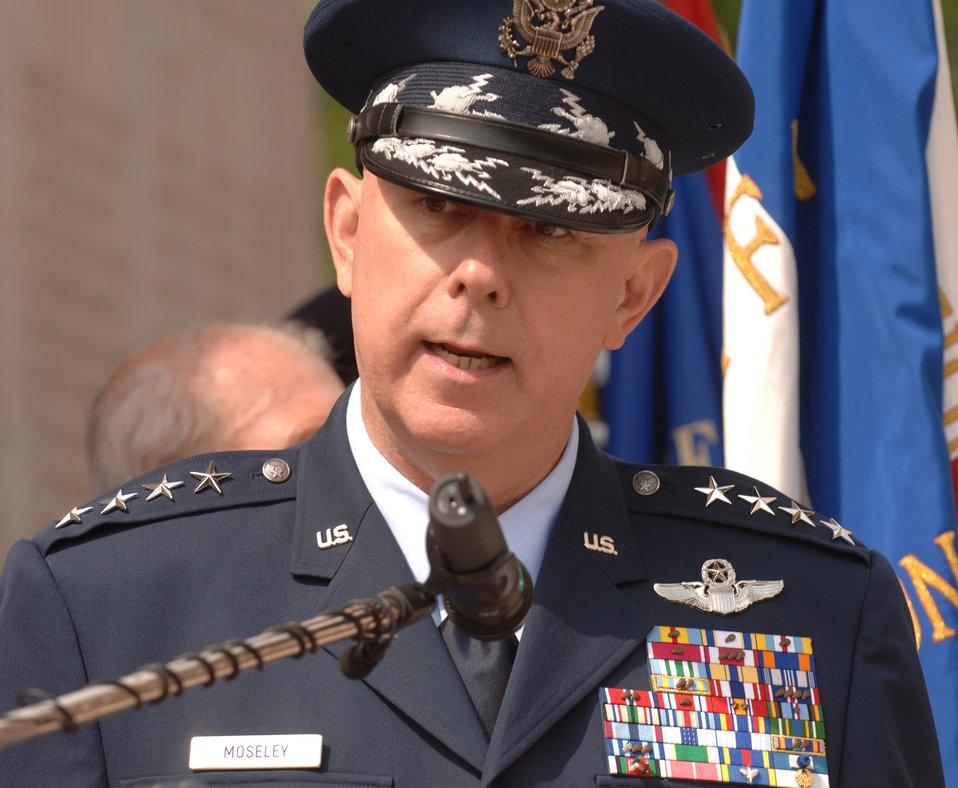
Resignation statement from the Air Force chief of staff

Air Force Chief of Staff Gen. T. Michael Moseley made a statement June 5 announcing his plan to tender his resignation to Secretary of Defense Robert M. Gates.